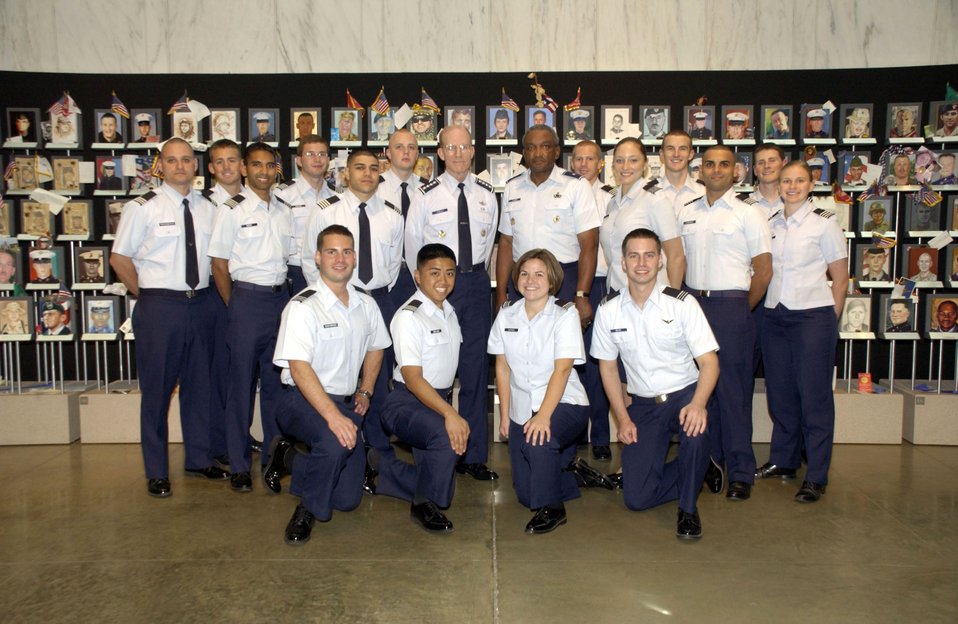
SECDEF administers 1st commissioning oath to ROTC cadets

General John D.W. Corley, the Air Force vice chief of staff, is pictured with Air Force ROTC cadets at the Women's Memorial in Arlington, Va. The 16 cadets were part of 55 chosen from various ROTC detachments for a commissioning ceremony May 17 led by President George W. Bush. The cadets were treated to a tour of the Washington, D.C. area the day prior to the ceremony at the White House.